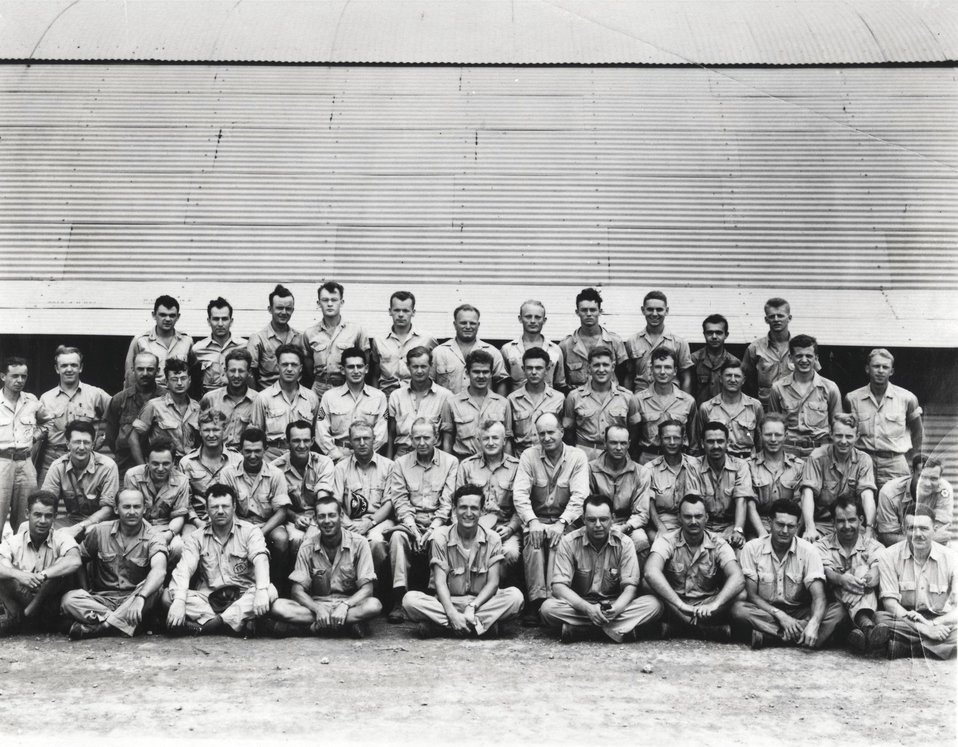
PROJECT - A STAFF OF TINIAN